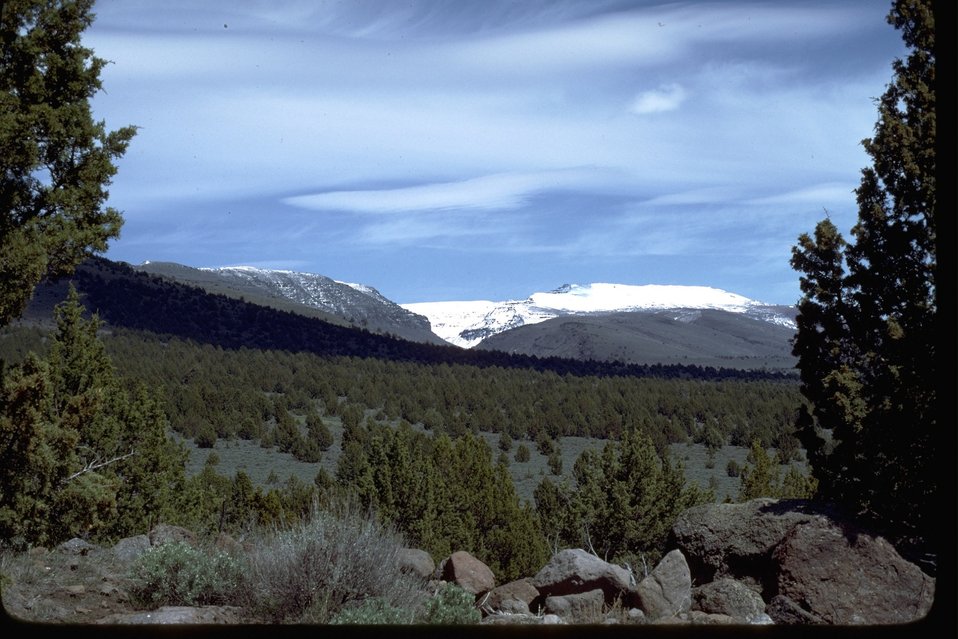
Western Juniper invasion in the South Steens Mountain area.